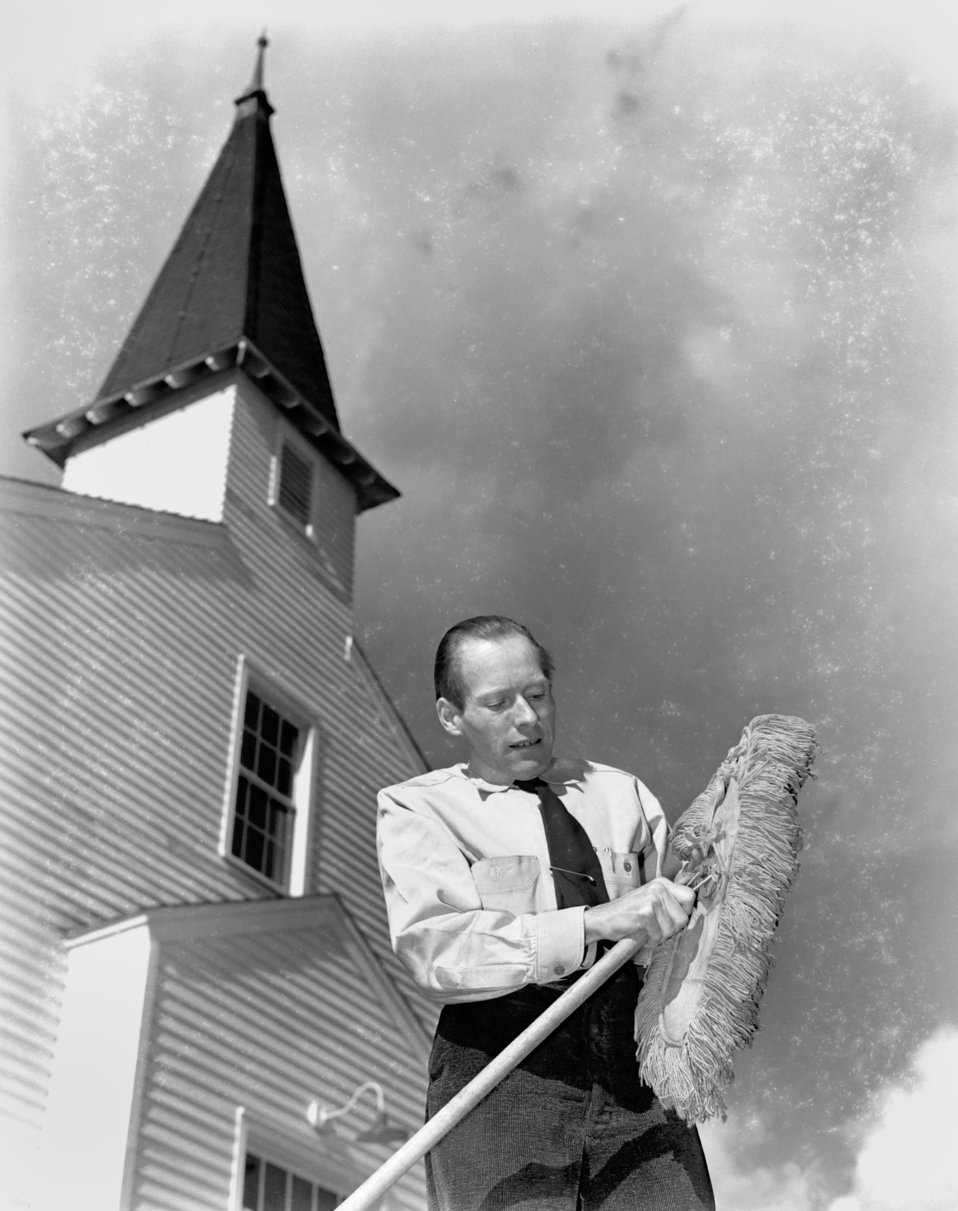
Church Sexton Oak Ridge 1947

4042-2 DOE photo Ed Westcott 11-28-1947 Allen Fahrenkampf Oak Ridge Tennessee